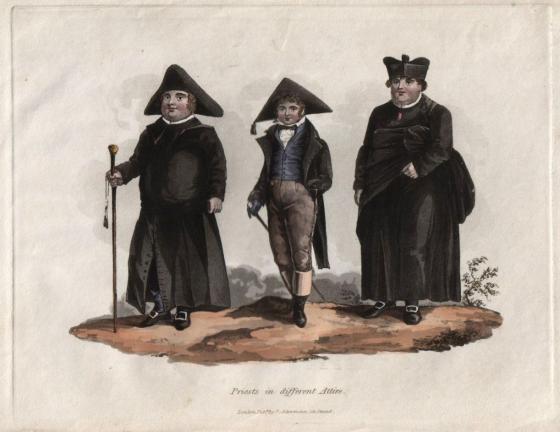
Padres da Ilha da Madeira em diferentes trajos (Cura, Seminarista e Vigário). Priests in different Atires Litografia colorida, 22,5 x 11,6 cm. Pub. in A History of Madeira, At Rudolph Ackermann's, Londres, 1821 Arquivos Particulares, Doutor Rui Carita, Funchal, em depósito no Arquivo Regional da Madeira. O Cura e o Vigário trajam batina e sapatos de filvela, trazendo o cura barrete eclesiástico e o vigário, tricórnio, com bengala ou bastão. O seminarista ao centro, ao que pensamos, não parece trajar nada que o identifique com a Igreja.